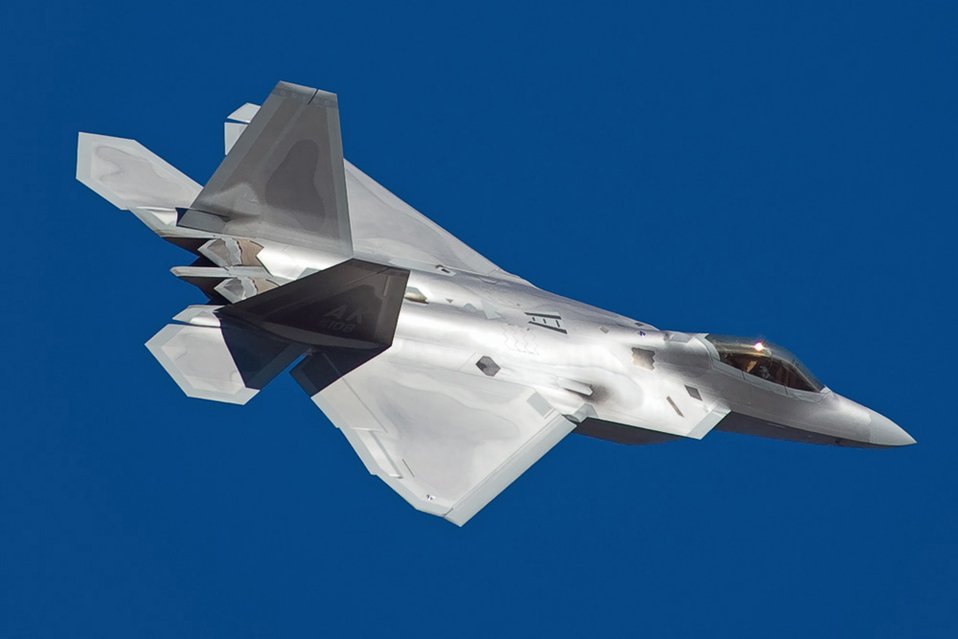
Elmendorf Airmen complete first F-22 deployment

An F-22 Raptor flies Feb. 4 over Tyndall Air Force Base, Fla. Members of the 3rd Wing and Air Force Reserve Command's 477th Fighter Group from Elmendorf AFB, Alaska, combined for its first F-22 Raptor deployment to Tyndall AFB for Combat Archer. The 132 Reserve and active-duty Airmen and eight F-22s from Alaska were in Florida for Weapons System Evaluation Program training. Colonel Shower is the 90th Fighter Squadron commander and Sergeant Grantham is assigned to the 90th Aircraft Maintenance Unit.